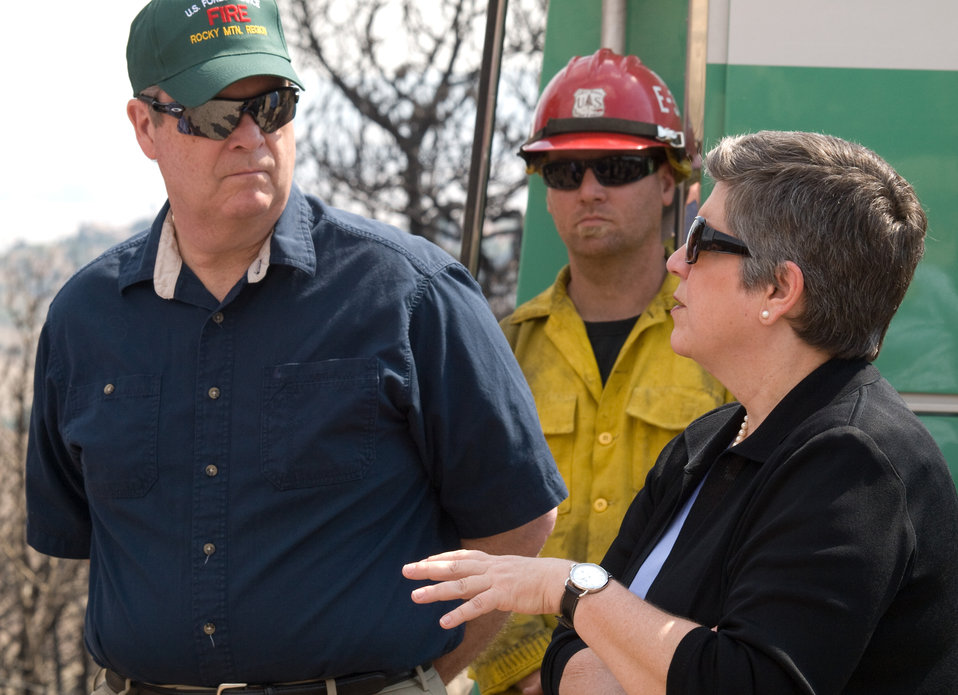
Agriculture Secretary Tom Vilsack (left) talks with Homeland Security Secretary Janet Napolitano at the Waldo Canyon Fire near Colorado Springs, CO on Tuesday, July 3, 2012.